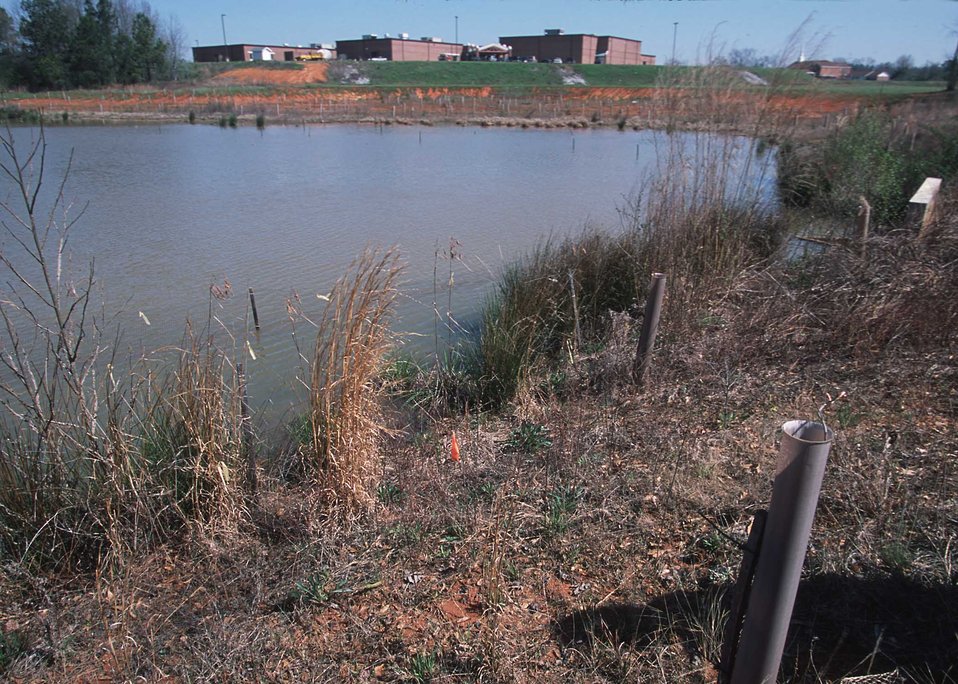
Wetland project that is part of the Barnsville Recreation Center and outdoor classrom. The trail and wetland serve as an outdoor classroom and has a nature trail through natural and constructed wetlands. Assistance also provided by RC&D.